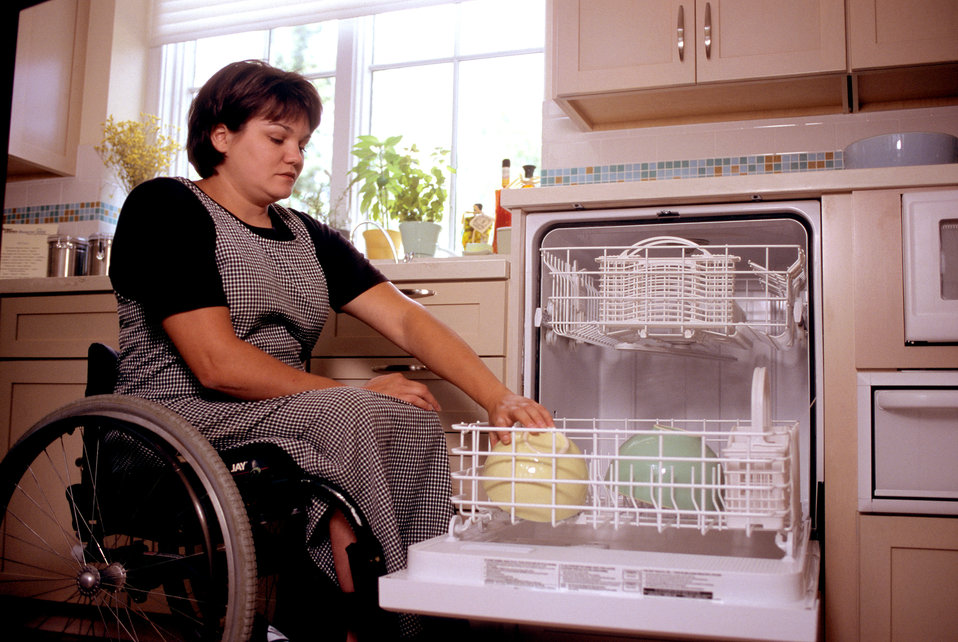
This 2000 image depicted a universally-designed, raised dishwasher that was being loaded by a wheelchair-seated woman, who seemed to be filling the appliance in an effortless manner. Dishwashers installed in this way raise the storage area up within reach of people who use wheelchairs, and who may have difficulty in bending down to the level of conventionally installed appliances. Even from her seated position, this woman could easily reach the dishes in the bottom rack of this raised unit.